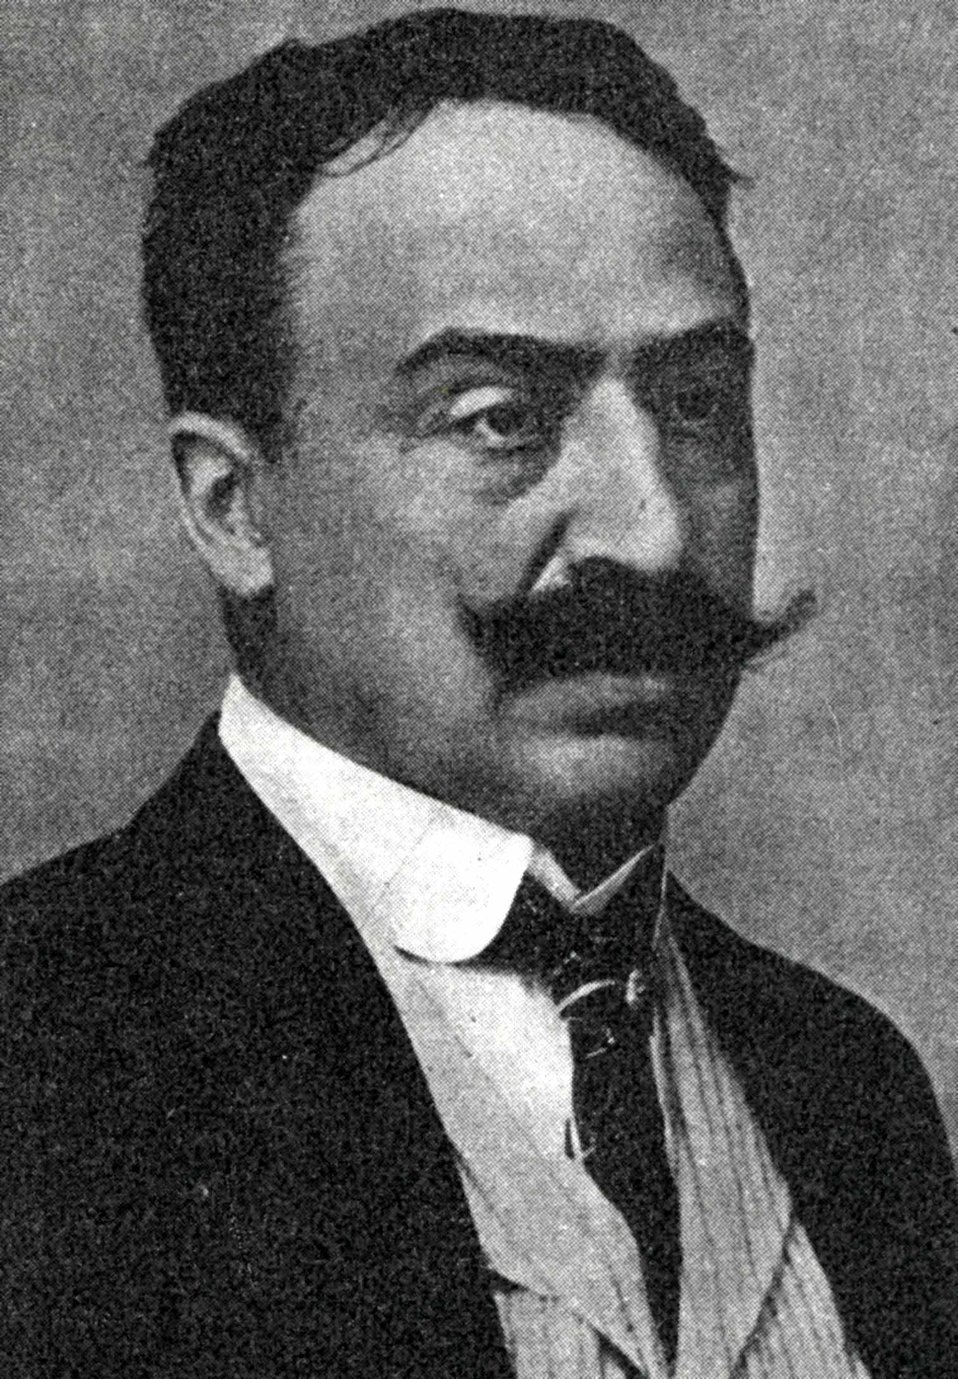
Giuseppe Sacconi (1854-1905)